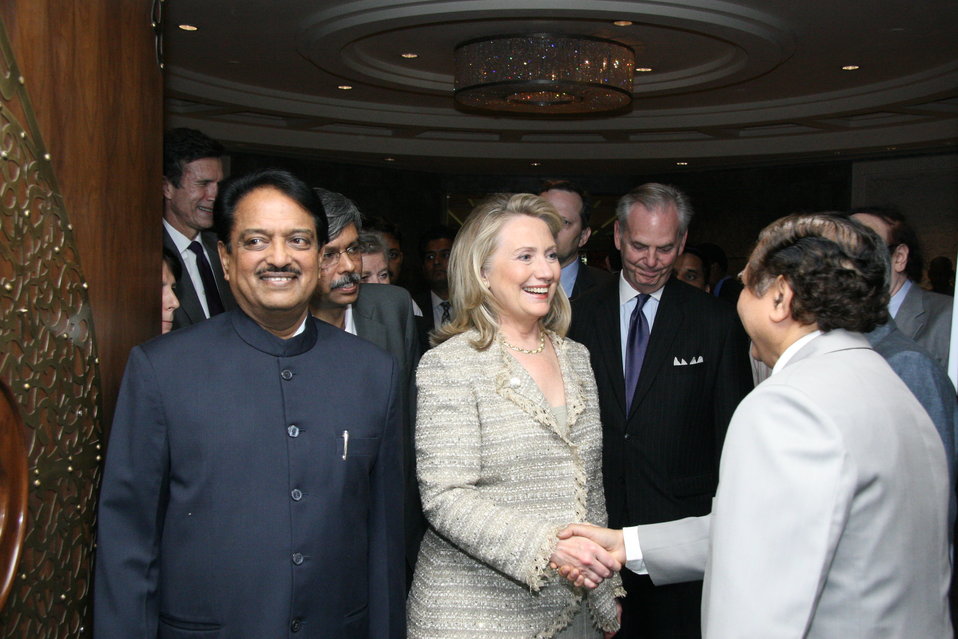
Secretary Clinton Enters the Innovation Partnerships Event

U.S. Secretary of State Hillary Rodham Clinton, flanked by Indian Minister of Science and Technology Vilasrao Deshmukh, left, enters the 'U.S.-India Partnering for Innovative Solutions' event in New Delhi, India, on May 8, 2012.